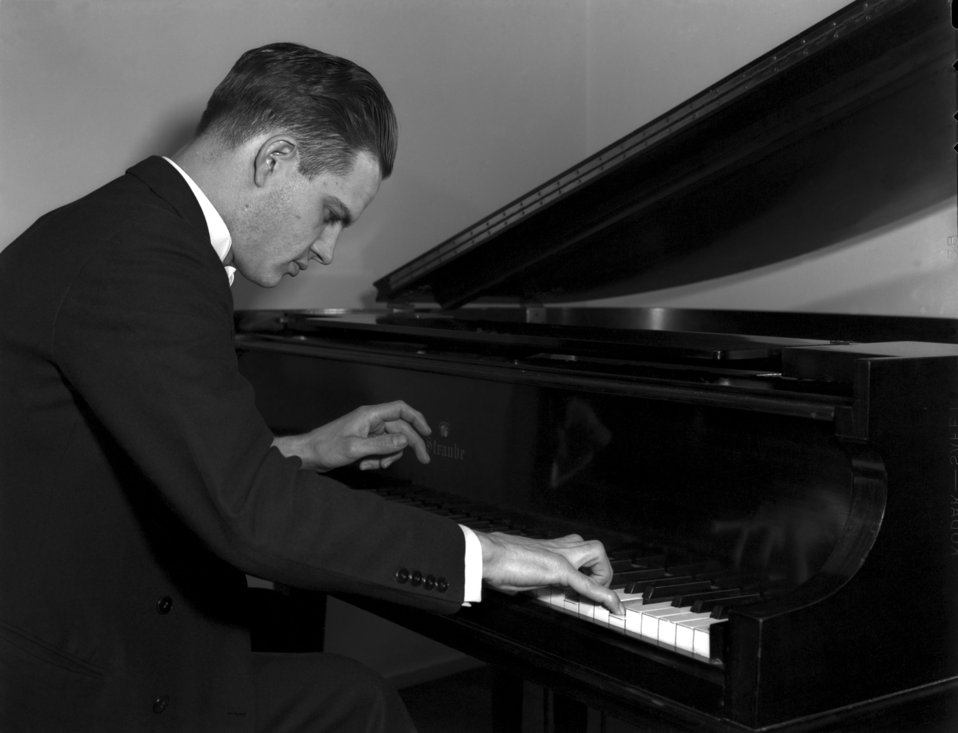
Col. D.G. Williams Oak Ridge

3257-4 DOE photo Ed Westcott 1-17-1947 Oak Ridge Tennessee